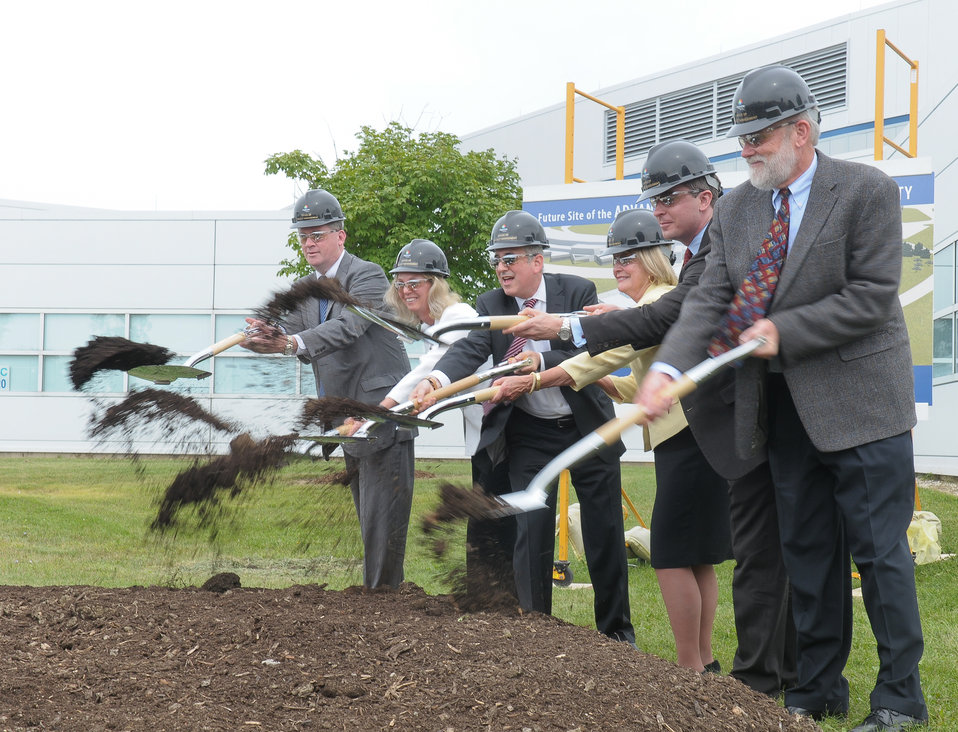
Groundbreaking for the Advanced Protein Crystallization Facility at Argonne National Laboratory.
The facility will enable scientists from Illinois and around the world to produce, purify and characterize a wide range of proteins more rapidly and have a critical role in the development of important medical therapeutics.